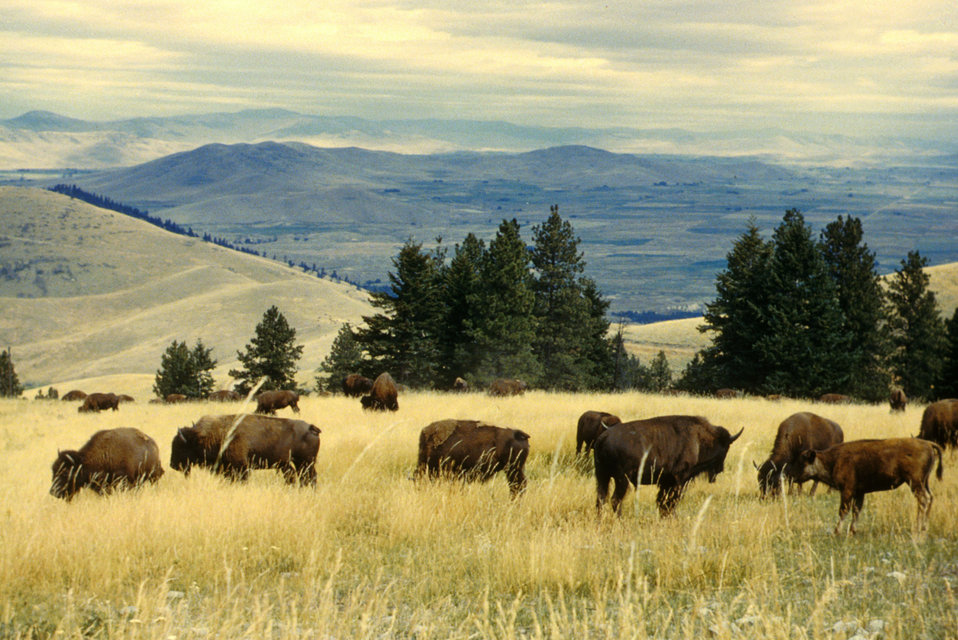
National Bison Range scenic2

Bison graze on the National Bison Range in Montana.